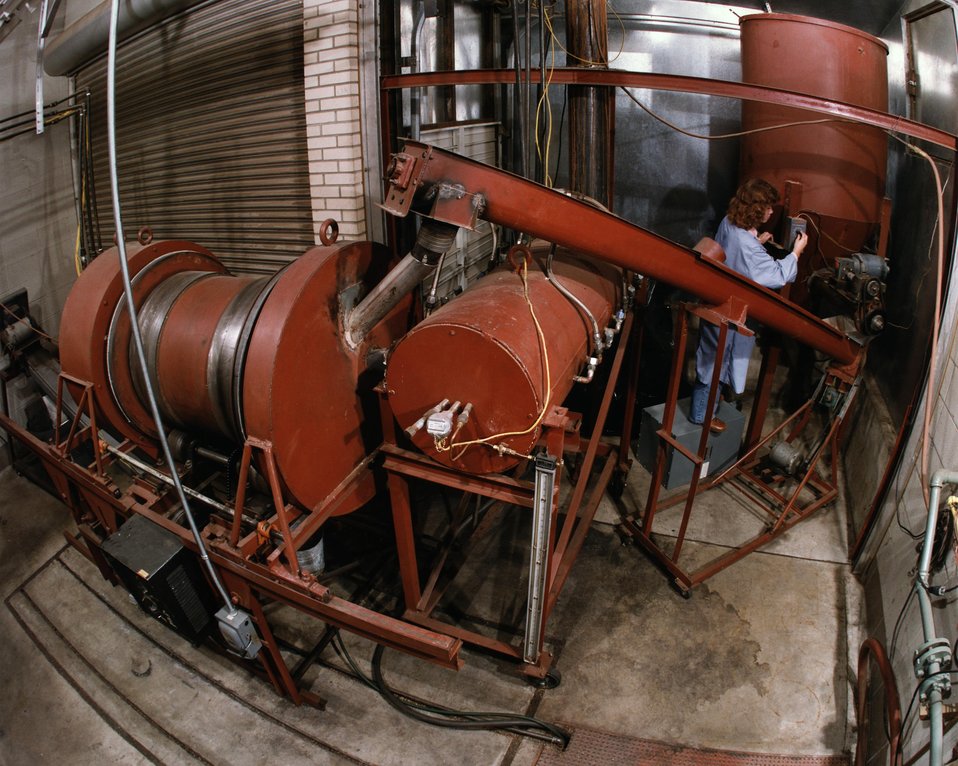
VIEW OF THE SCALE MODEL ROTARY KILN FOR GASIFYING BIOMASS.

THIS SCALE MODEL KILN DUPLICATES THE RETENTION TIME AND THE BED AGITATION OF THE FULL SCALE ROTARY CONVECTOR. OVERALL KILN DIMENSIONS, 35-INCHES LONG BY 26 INCHES OUTER DIAMETER,DUPLICATE THE LENGTH/ DIAMETER OF THE PROTOTYPE KILN. MATERIAL IS FED FROM THE FEED STORAGE BIN TO THE ROTARY KILN VIA TWO SCREW CONVEYORS. THE FIRST, A VARIABLE SPEED CONVEYOR, IS LOCATED IN THE BOTTOM OF THE BIN AND IS CONNECTED TO THE SECOND CONVEYOR, A CONSTANT SPEED CONVEYOR, WHICH DISCHARGES TO THE KILN. THE FEED IS CONVERTED TO CHARCOAL AND OFF- GASES IN THE KILN, WITH THE CHAR DISCHARGING TO A WATER JACKETED SCREW CONVEYOR FOR REMOVAL TO STORAGE. AIR IS SUPPLIED TO THE KILN FROM A COMPRESSOR, PASSING THROUGH ROTAMETERS INTO THE KILN AT ANY OF SIX DIFFERENT LOCATIONS. OFF GASES PASS FROM THE KILN INTO AN AFTERBURNER WHERE SECONDARY AIR IS INTRODUCED. THE COMBUSTION GASES THEN ARE DISCHARGED TO THE ATMOSPHERE THROUGH A STACK.